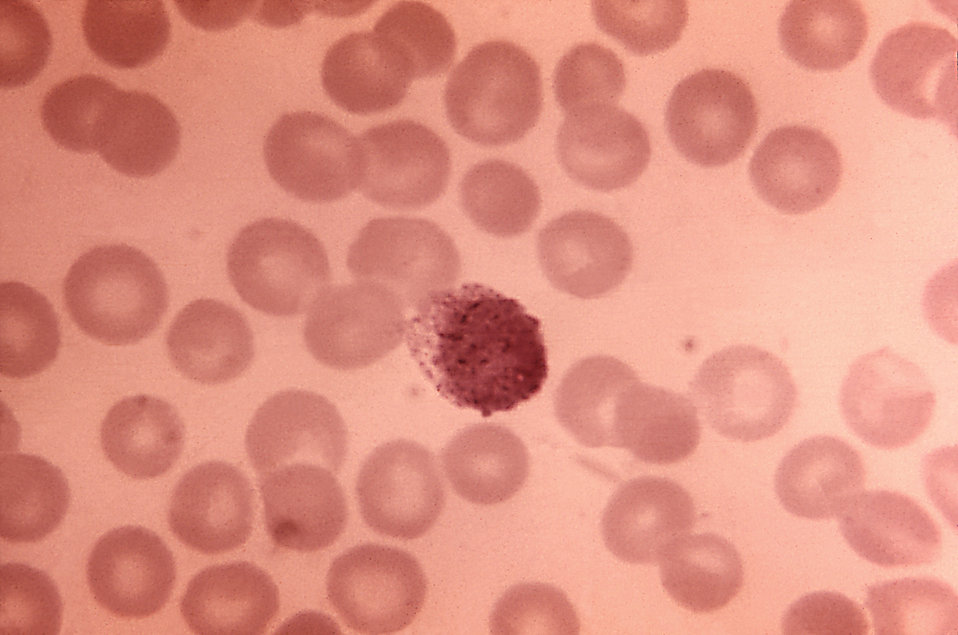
This blood smear photomicrograph depicts a Plasmodium vivax microgametocyte.